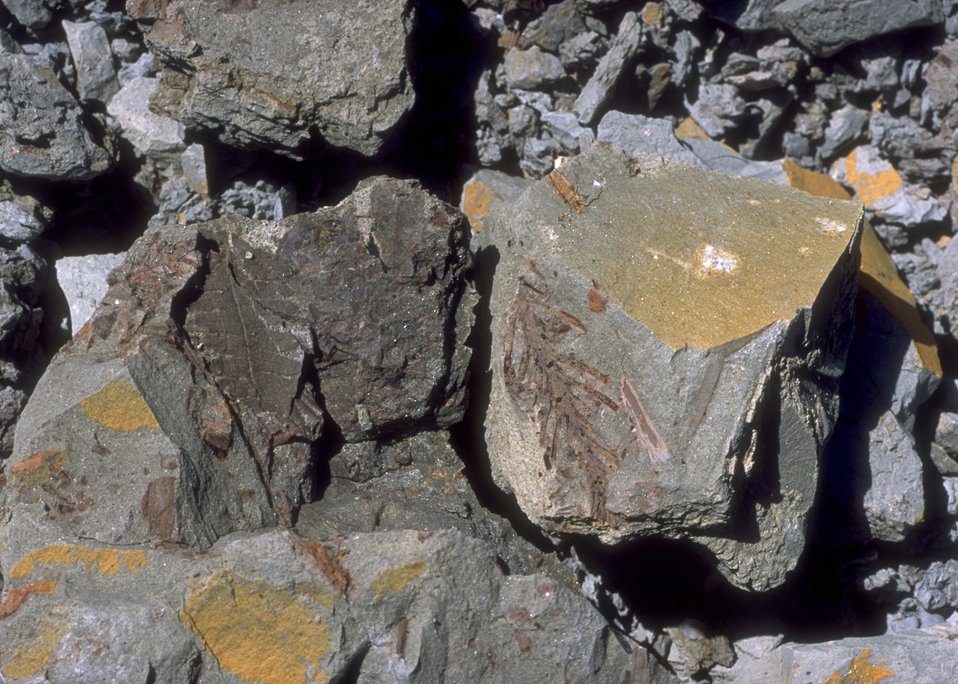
Close up of fossil vegetation, Cedar Ridge Paleo area, Worland Field Office.